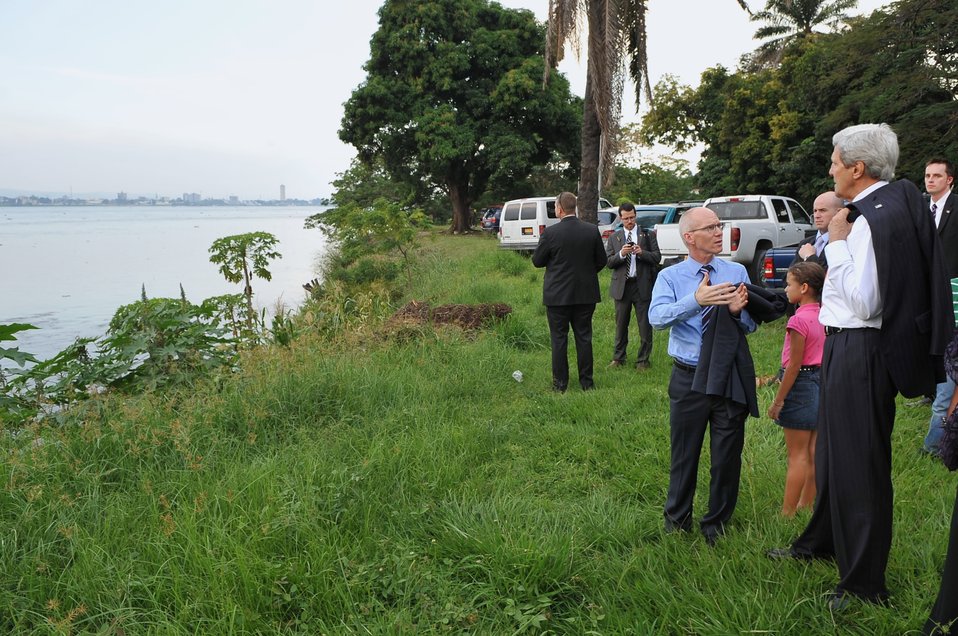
Secretary Kerry Looks Across Congo River to Brazzaville

U.S. Ambassador to the Democratic Republic of Congo James Swan shows U.S. Secretary of State John Kerry the city of Brazzaville, Republic of Congo, as the two men look across the Congo River from Kinshasa, Democratic Republic of Congo, on May 3, 2014.